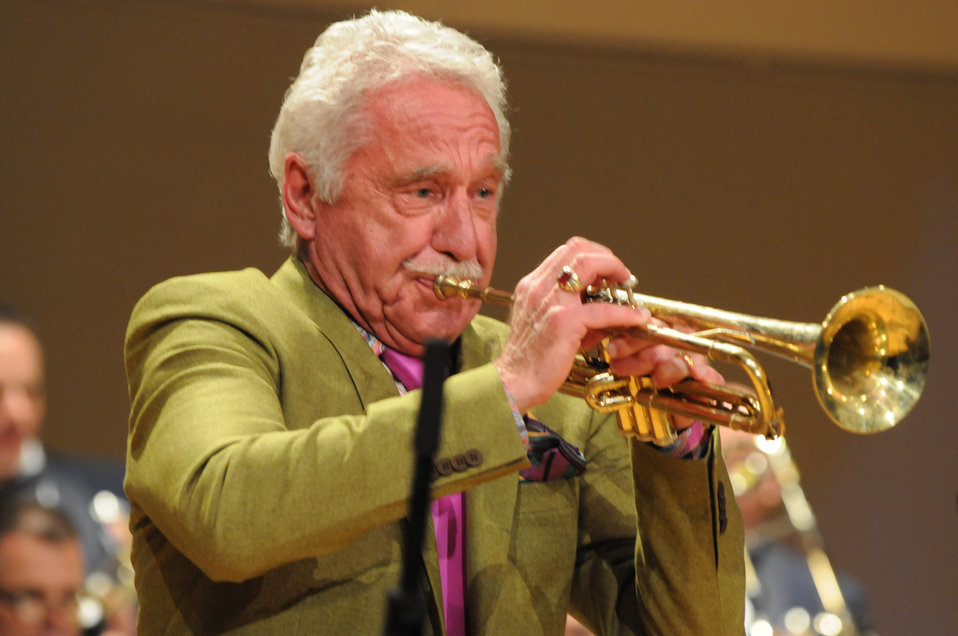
Airmen of Note wrap up tour

Legendary jazz trumpeter Doc Severinson and guest artist with the Airmen of Note, the premier jazz ensemble of the U.S. Air Force, performs March 19, 2011, at the University of Tennessee, Knoxville, Tenn. Doc made a guest appearance for the show, surprising the audience with a performance. The ensemble traveled through Virginia, Tennessee, Mississippi and Arkansas on its 2011 Spring Tour.